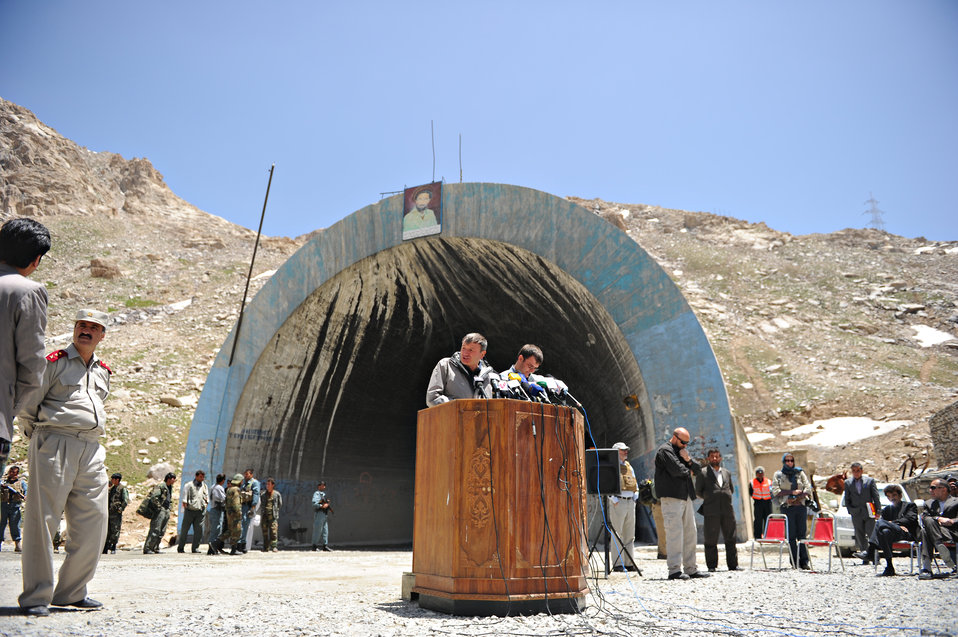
U.S. Ambassador Karl W. Eikenberry makes remarks during a ceremony to mark the beginning of renovations at the Salang Tunnel on the border of Parwan and Baghlan Provinces, Afghanistan, on Wednesday, June 15, 2011. (S.K.Vemmer/Department of State)